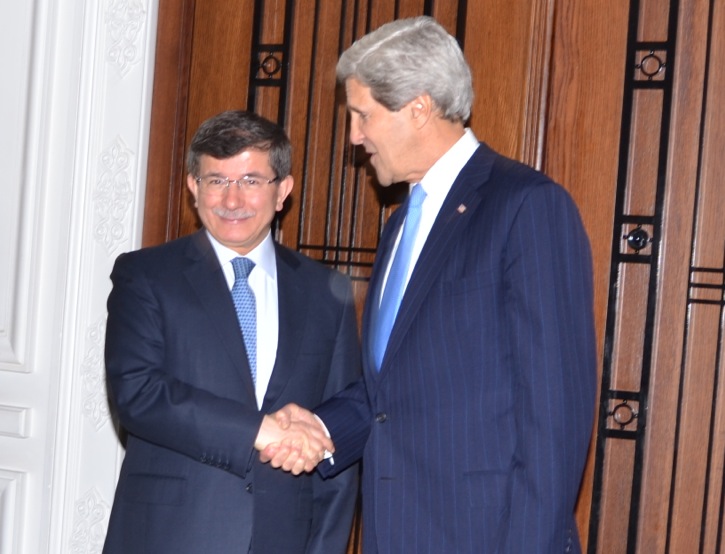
Secretary Kerry Shakes Hands With Turkish Foreign Minister Davutoglu

U.S. Secretary of State John Kerry shakes hands with Turkish Foreign Minister Ahmet Davutoğlu in Istanbul, Turkey, April 7, 2013.